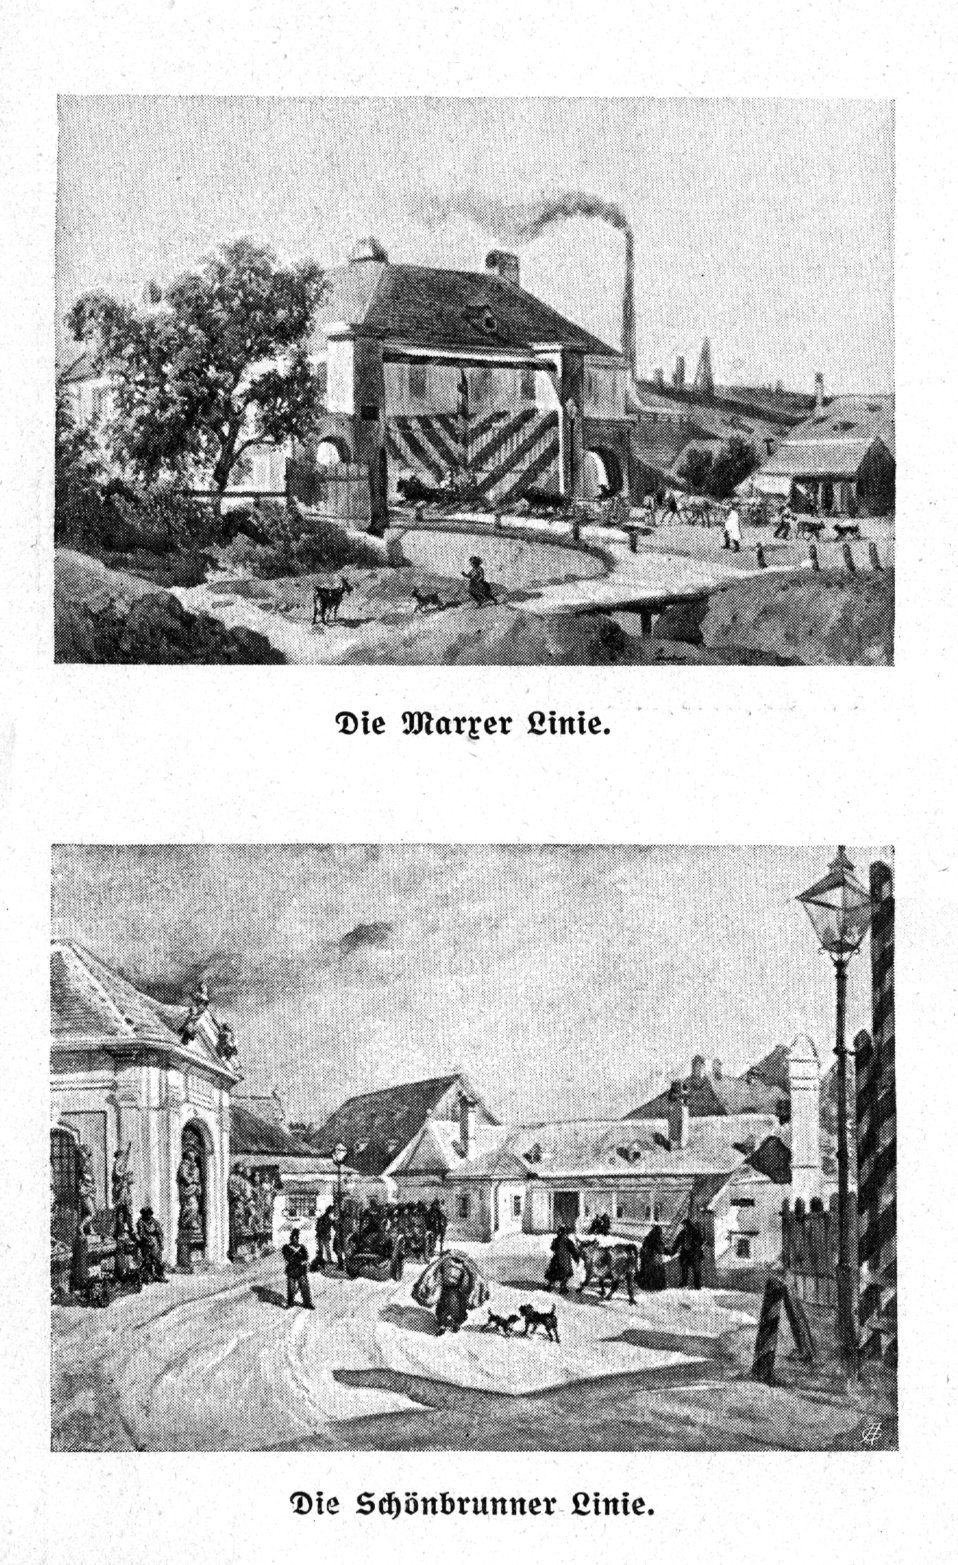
'Linienaaemter